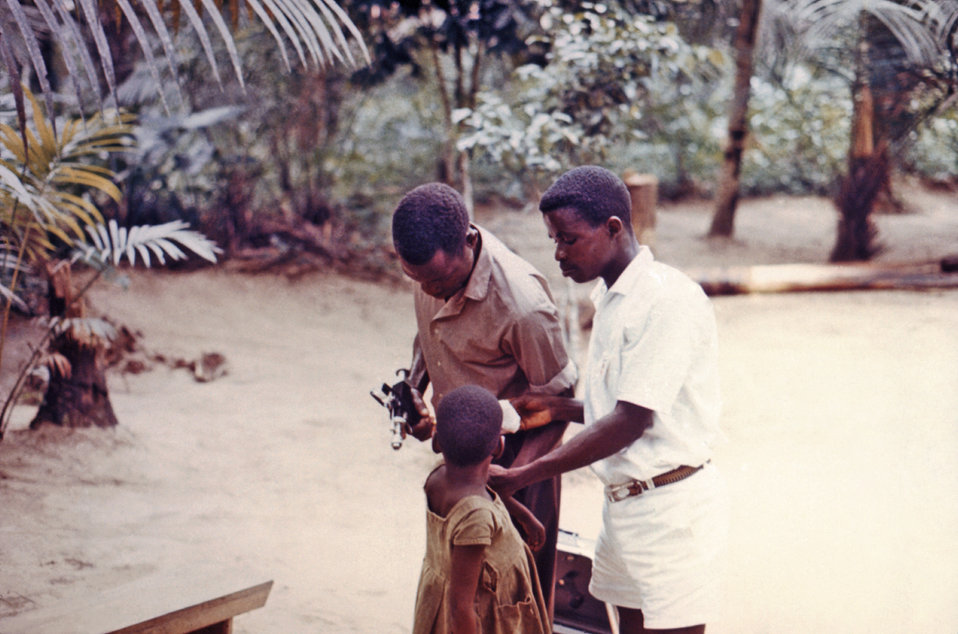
This late 1960s photograph shows a child being vaccinated for measles and smallpox in a relief camp outside of a war zone in Nigeria. These Ped-O-Jet vaccination guns were used in the administration of these inoculations.